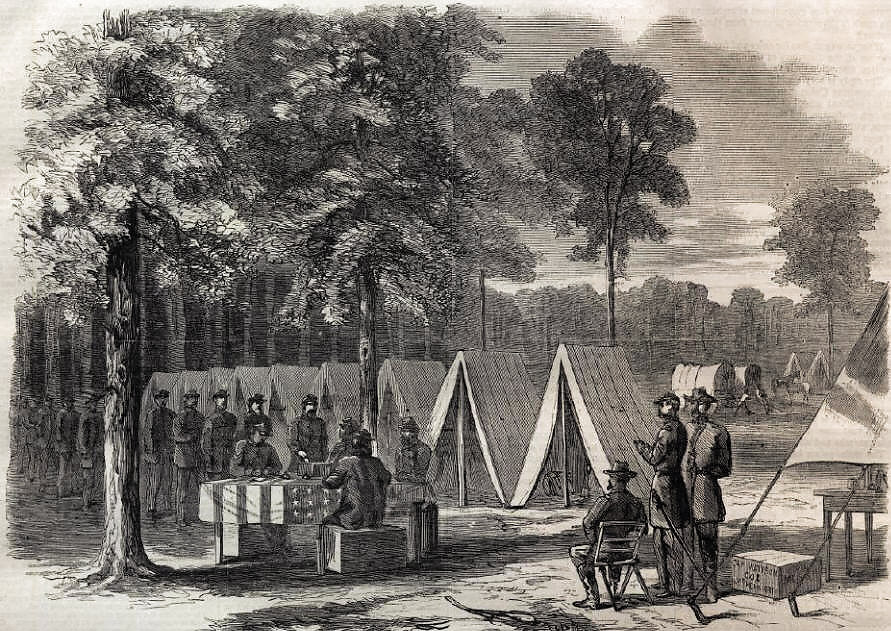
Servicemembers to follow long absentee voting tradition

Artwork published in Harper's Weekly shows Union Soldiers from Pennsylvania casting absentee ballots during the 1864 presidential election.